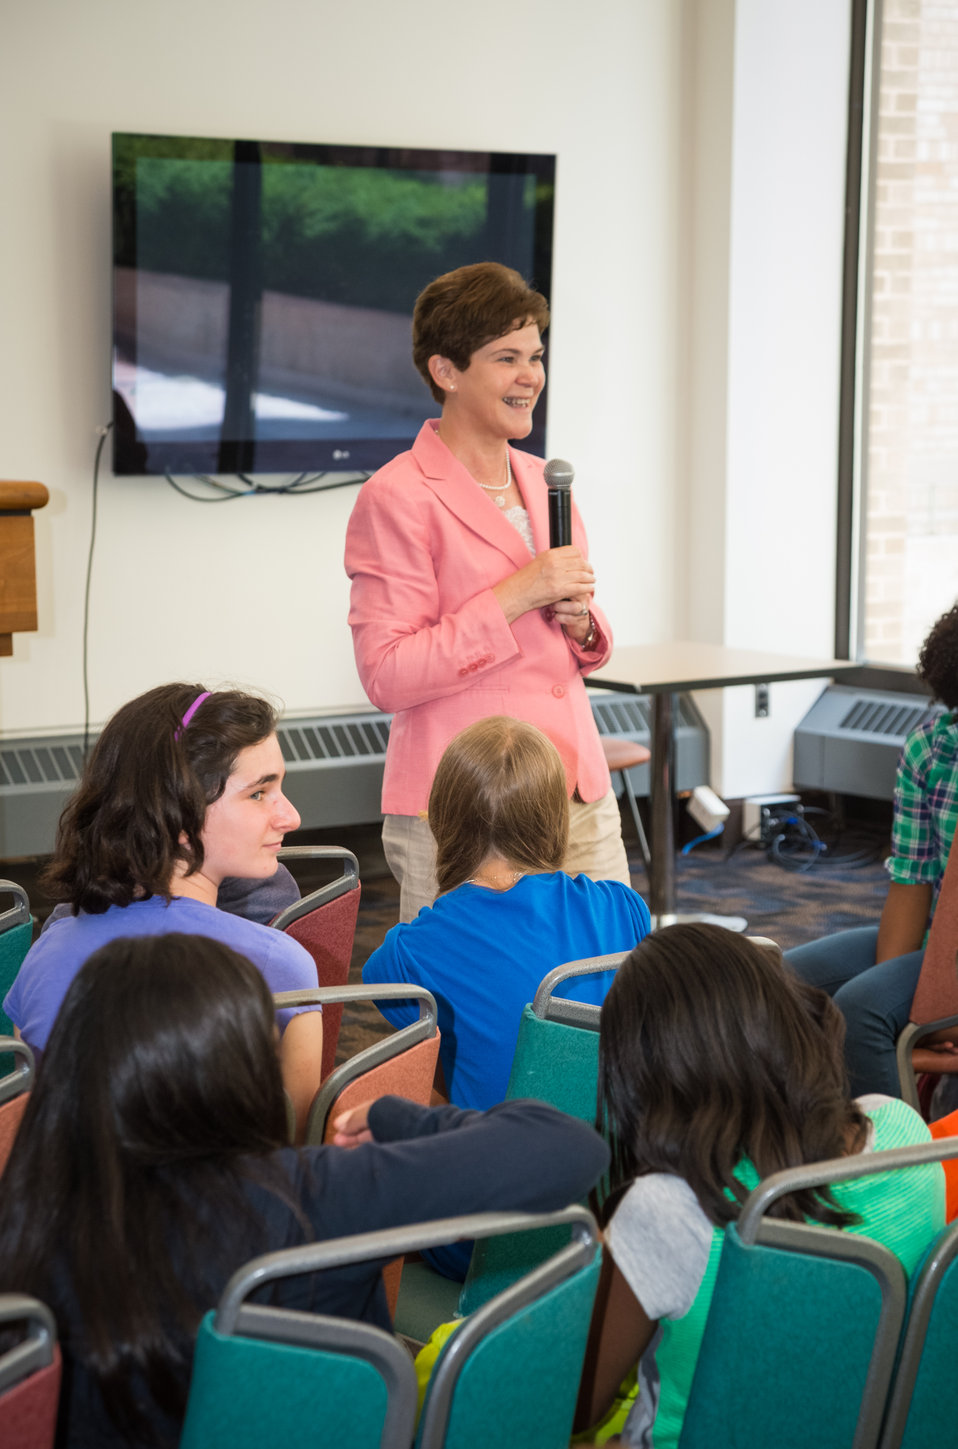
Agriculture Deputy Secretary Krysta Harden speaking with students from the Alice Deal Middle School, Washington, DC students during their visit to the United States Department of Agriculture (USDA) in Washington, DC, Wed. Jun. 4, 2014. The students studied hunger, food security, how to prevent hunger and organizations involved in solving hunger situations nationally and worldwide. A lot of what they learned is administered through the USDA.